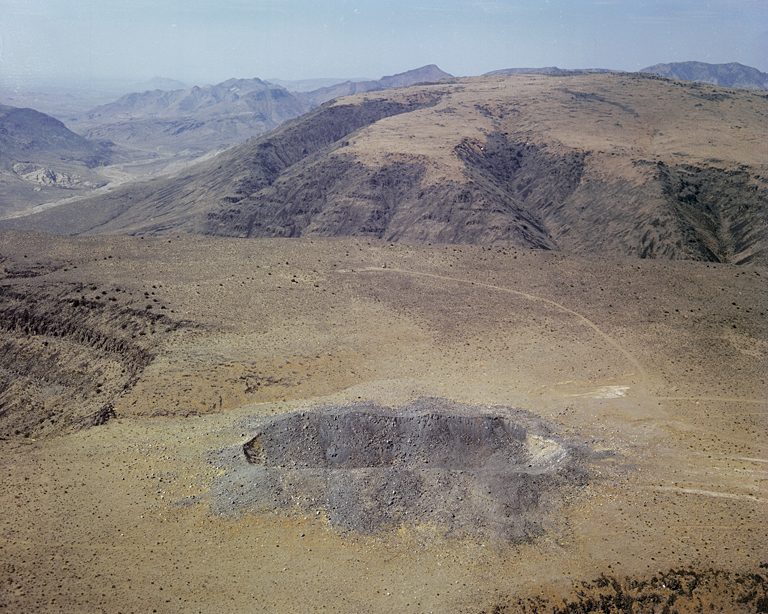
Nevada Cleanup Sites Get More Bang for Their Recovery Act Buck

The DOE National Nuclear Security Administration Nevada Site Office (NSO) had earmarked a portion of its $44 million in Recovery Act funds to complete cleanup-phase activities at the Buggy site and other historically-contaminated atmospheric test locations at the NNSS. Efficiencies in scheduling and planning allowed NSO to move beyond the cleanup process to the closure stage.